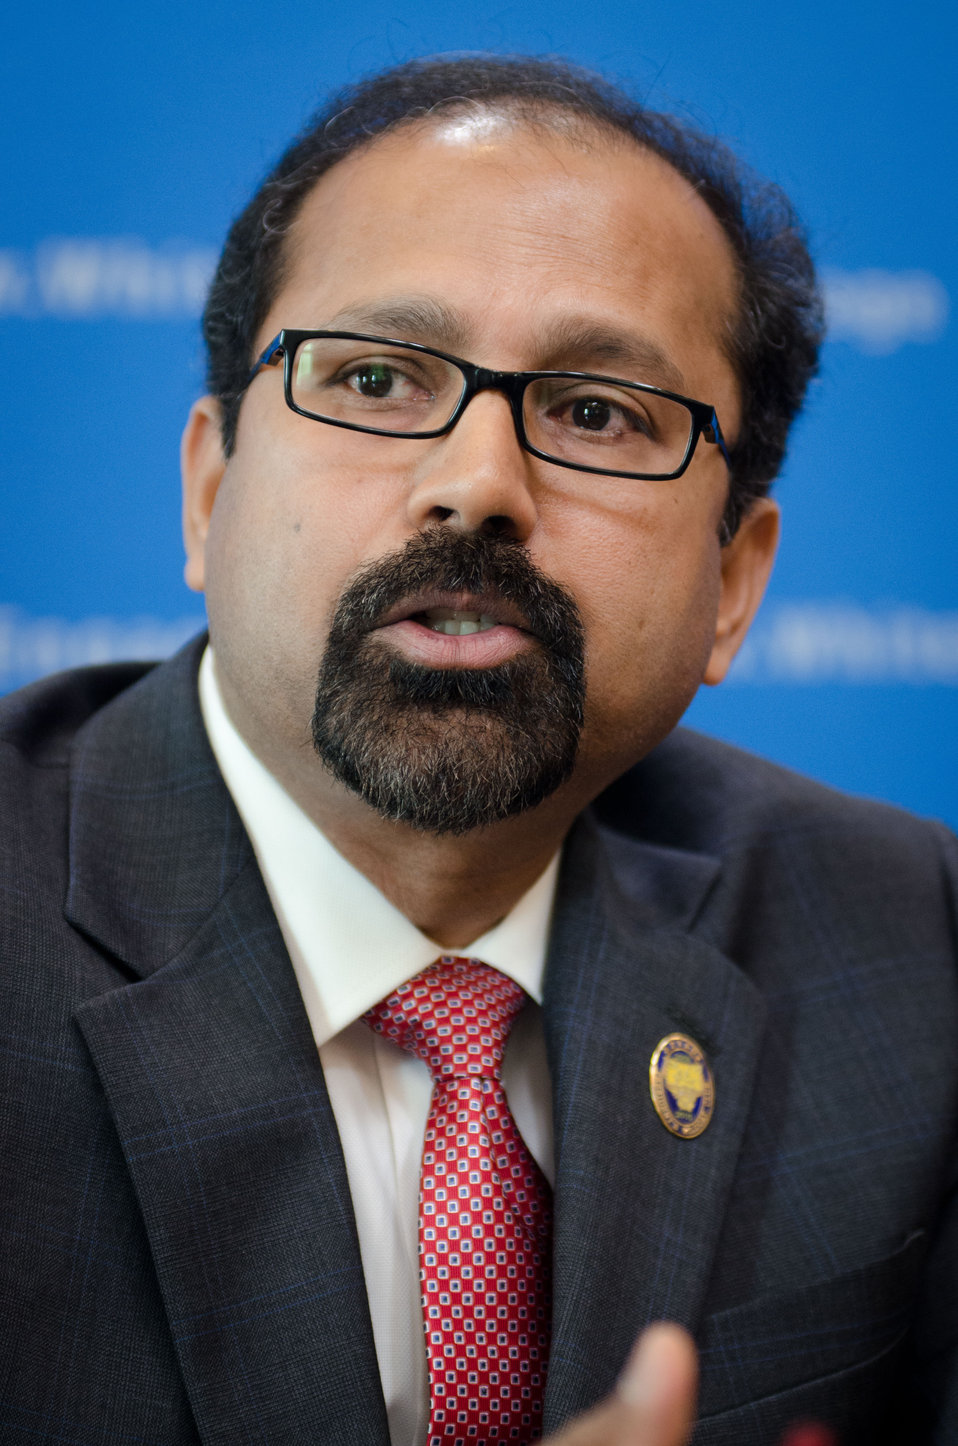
Fort Valley State University (Georgia) College of Agriculture, Family Sciences and Technology Dean and Director Dr. Govind Kannan. is one of eleven honorees recognized for his efforts to reduce hunger and increase food security in the U.S. and internationally at the White House Champions of Change Strengthening Food Security at Home and Abroad Event held at the White House on Thursday, September 6, 2012, in Washington, D.C.